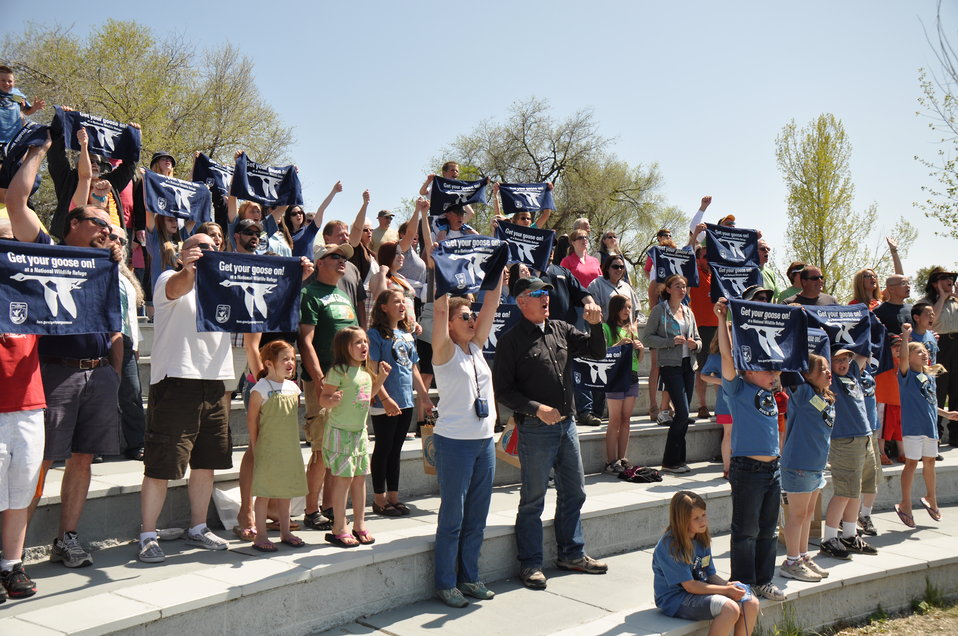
Get Your Goose On!!!

More than 100 people attended the 2012 Montana Junior Duck Stamps award ceremony. The folks pictured here posed with their towels as a videographer captured footage of them screaming, in unison, 'Get Your Goose On!'